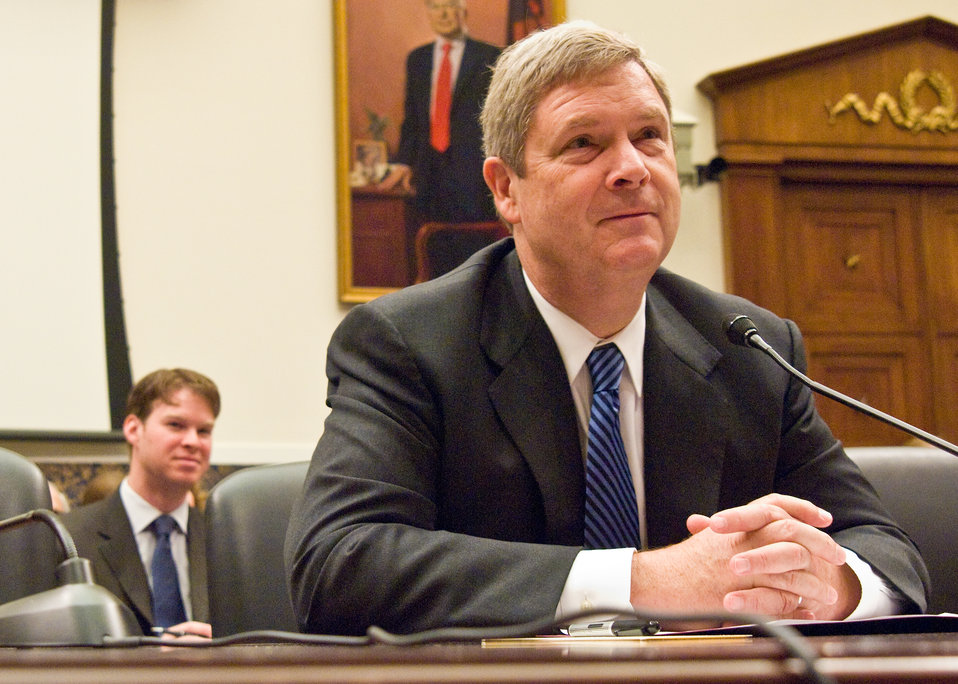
Agriculture Secretary Tom Vilsack shares a light moment with members of the House Committee on Education and Labor. Behind Secretary Vilsack is David Lazarus, Senior Advisor to the Secretary. Secretary Vilsack visited the committee to discuss “H.R.5504, Improving Nutrition for America’s Children Act,” in the Rayburn House Office Building in Washington, D.C., Thursday, July 1, 2010. USDA Photo 10di1426-33.